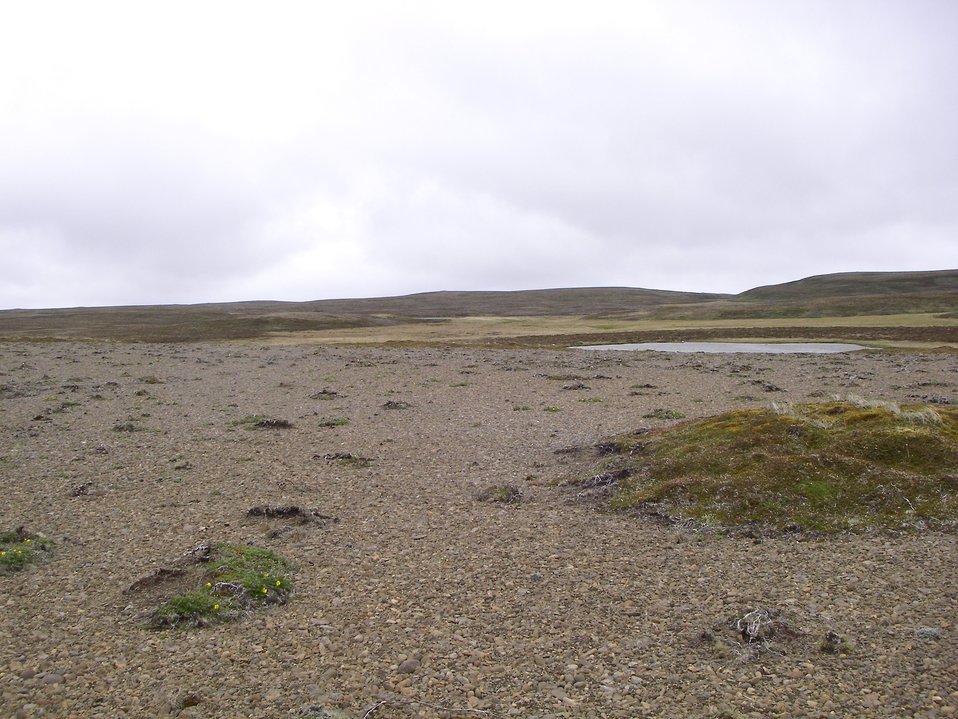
Izembek Wilderness

Wilderness north of Kinzarof Lagoon, Izembek National Wildlife Refuge
Photo by Kristine Sowl,
USFWS, Public Domain